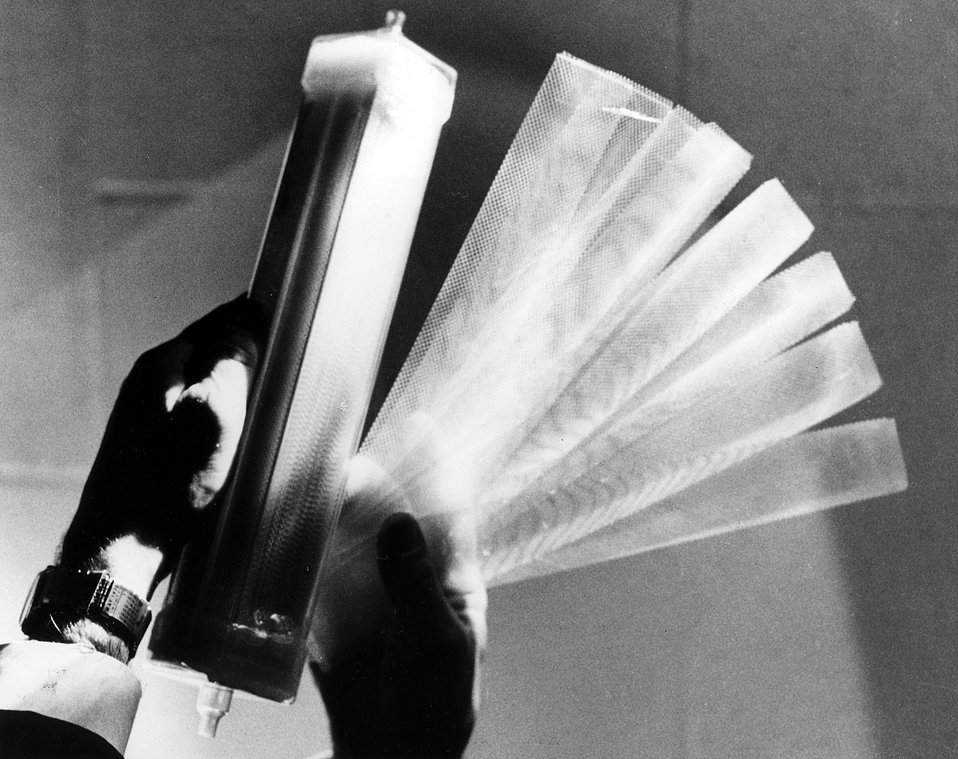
Successful search for special adhesives for a synchrotron at AEC's National Laboratory near Chicago also solved the major problem in developing the artificial kidney--the bonding of many short lengths of plastic tubing. Circa 1970.